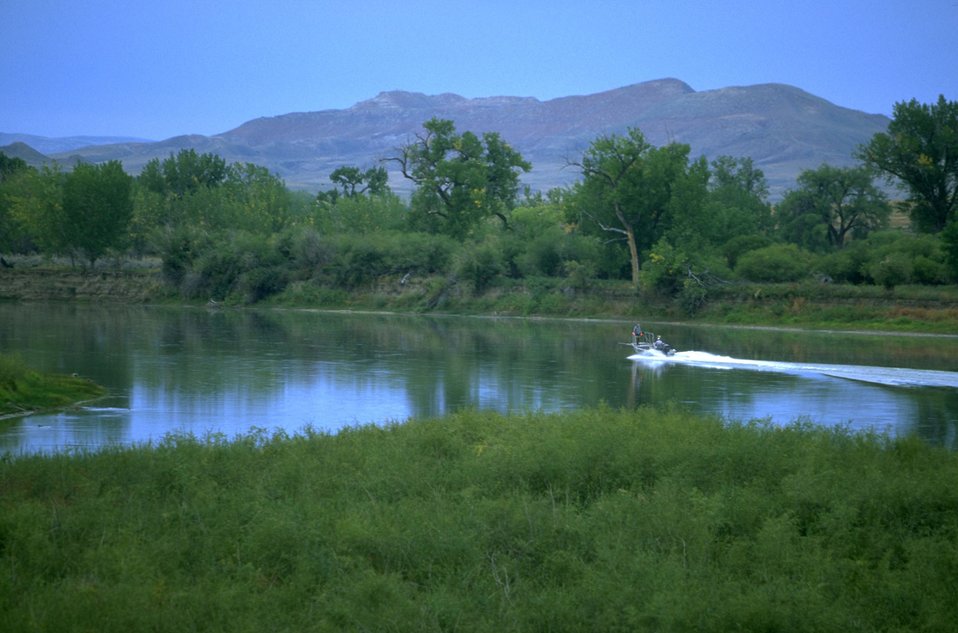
Judith Landing along the Upper Missouri National Wild and Scenic River with MT Dept of Fish Wildlife and Parks fish shocker boat in water